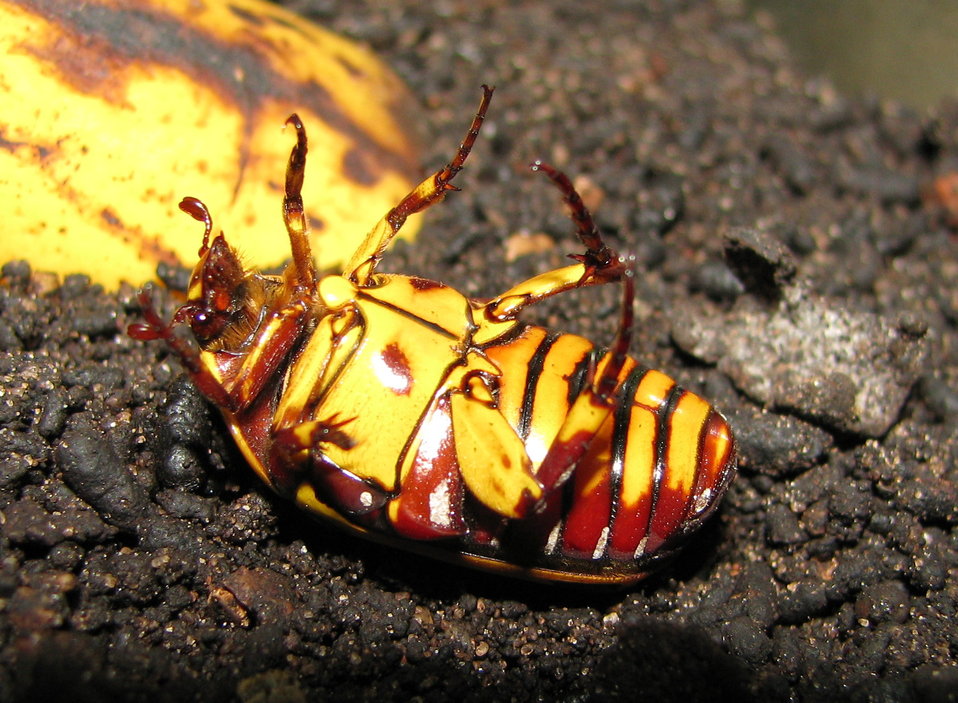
Pachnoda sinuata from ventral